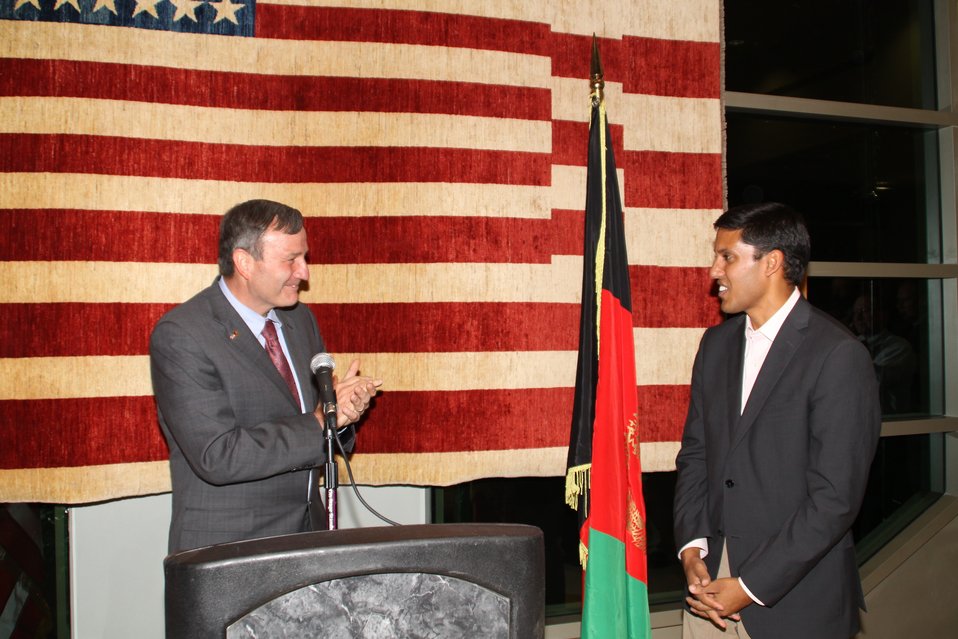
US Embassy Town Hall July 21, 2010